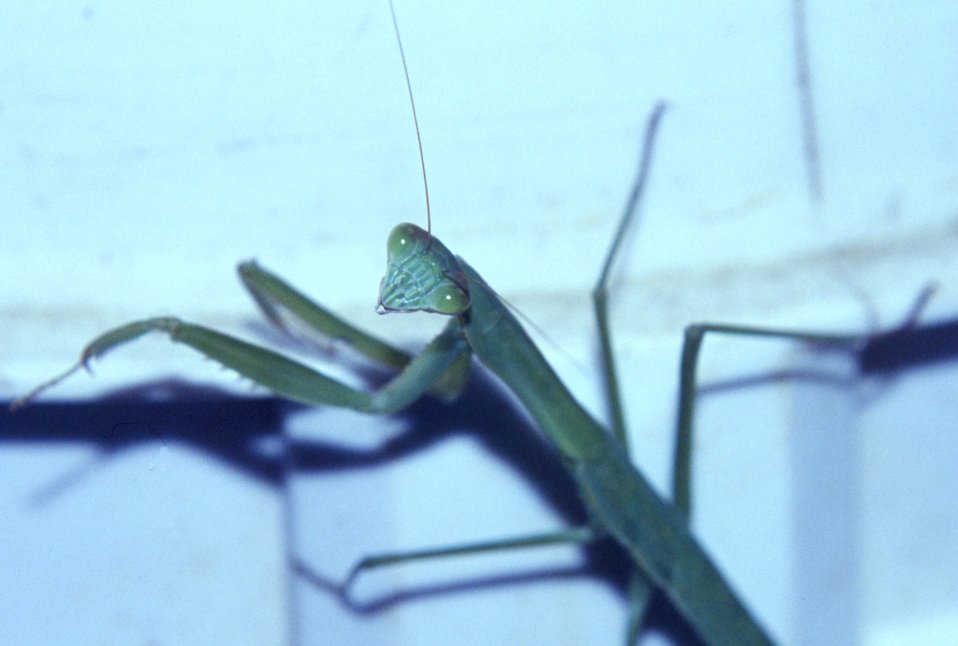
Praying mantis, Stagmomantis carolina (Johannson).